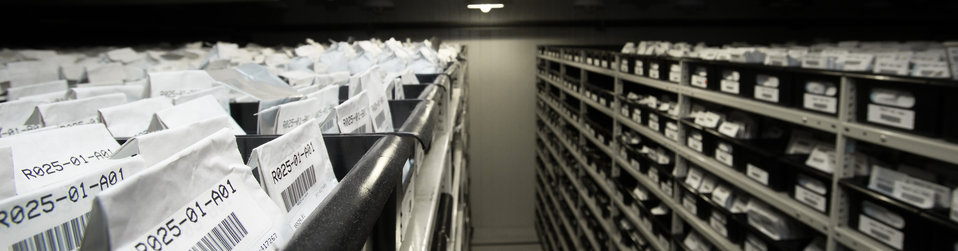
This is the U.S. Department of Agriculture's (USDA) Agriculture Research Service (ARS) National Center for Genetic Resources Preservation (NCGRP) National Plant Germplasm System (NPGS) cold storage vault, in Ft. Collins, CO on Wednesday, Nov. 6, 2013. This secure, long-term storage facility contains nearly 1 million samples of more than 13,200 plant species from the NPGS and from other international plant gene banks, as well as other U.S. government land management agencies. Most of the samples are preserved in the form of seeds. Some germplasm is also preserved as buds, cuttings, and tissue cultures. The 20 NPGS gene banks across the U.S. safeguard, study, and distribute these plant samples, each collected at a particular time and place, including modern and old varieties, wild relatives of crop plants, and genetic stocks. Seeds are packaged in moisture proof foil bags for cold vault storage at -18 °C (0 °F). The packets of seeds are organized in high-density rolling shelves. NCGRP seed preservation protocols are based on more than 50 years of experience and research. The facility opened in 1958 and was expanded in 1992. Preservation of diversity of plant genetic resources helps farmers and conservationists face challenges from climatic change, the spread of new diseases, destructive pests, and abiotic stresses such as drought and salinity. For more information about the NCRGP, please go to www.ars.usda.gov/main/site main.htm?modecode=54-02-05-00 USDA photo by Lance Cheung.